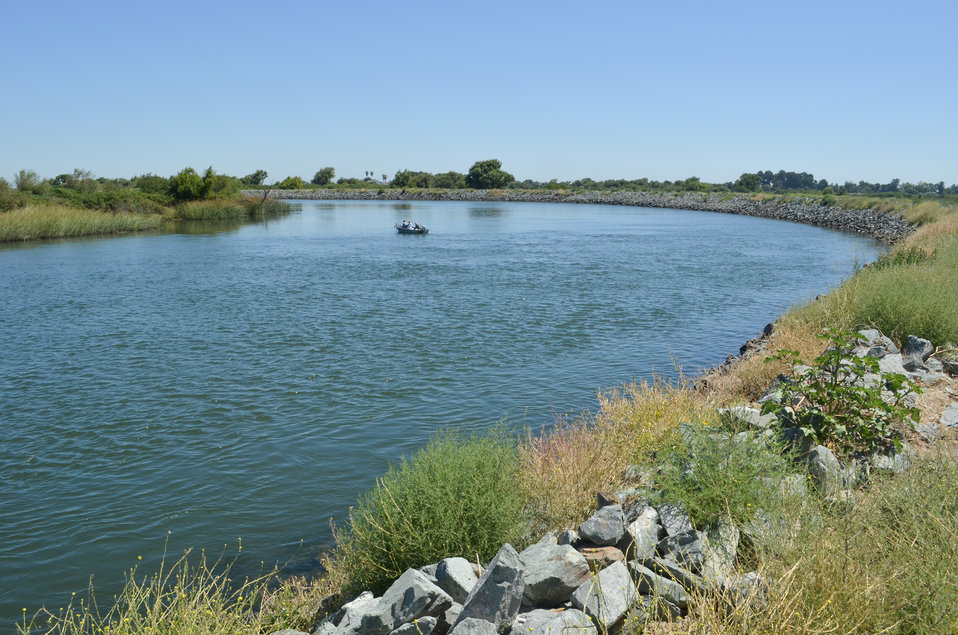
Horseshoe Bend levee

The Horseshoe Bend levee on Bethel Island, Calif., shown at right Aug. 16, 2011, is slated for an upgrade under the CALFED Levee Stability Program - an effort to quickly fix urgent levee problems in the imperiled Sacramento-San Joaquin Delta while a longer-term plan for reducing flood risk throughout the Delta is developed. The U.S. Army Corps of Engineers Sacramento District is studying how best to strengthen the levee, the weakest point in the levee system surrounding the island, home to more than 2,500 people.